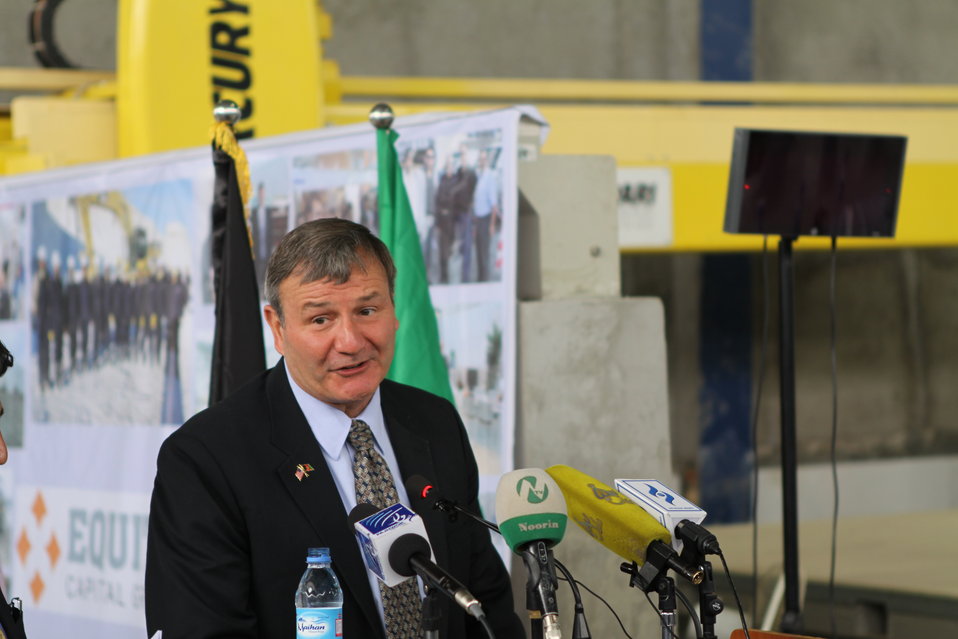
100525 Hirat Marble Conference 218